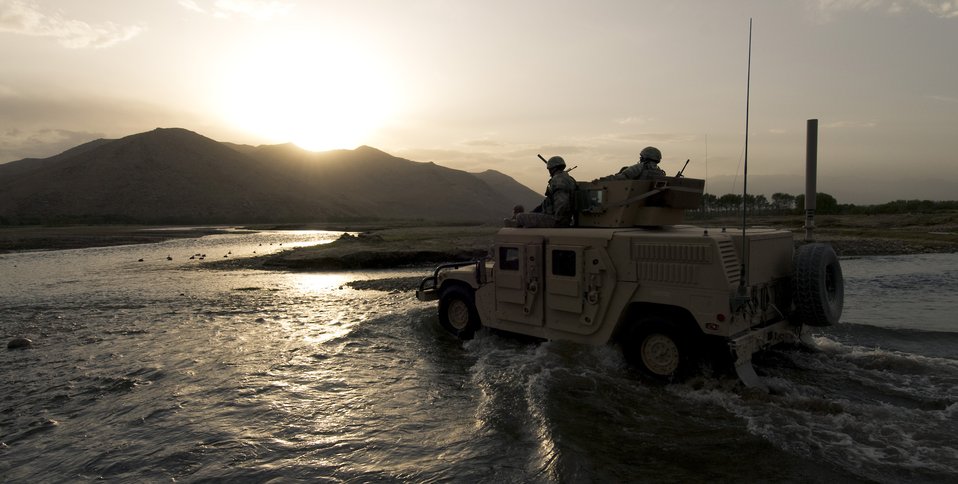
Village visit

A Humvee crosses a river in Afghanistan last month. A few of the dismounted Airmen temporarily ride on top of the Humvee to keep their boots dry.